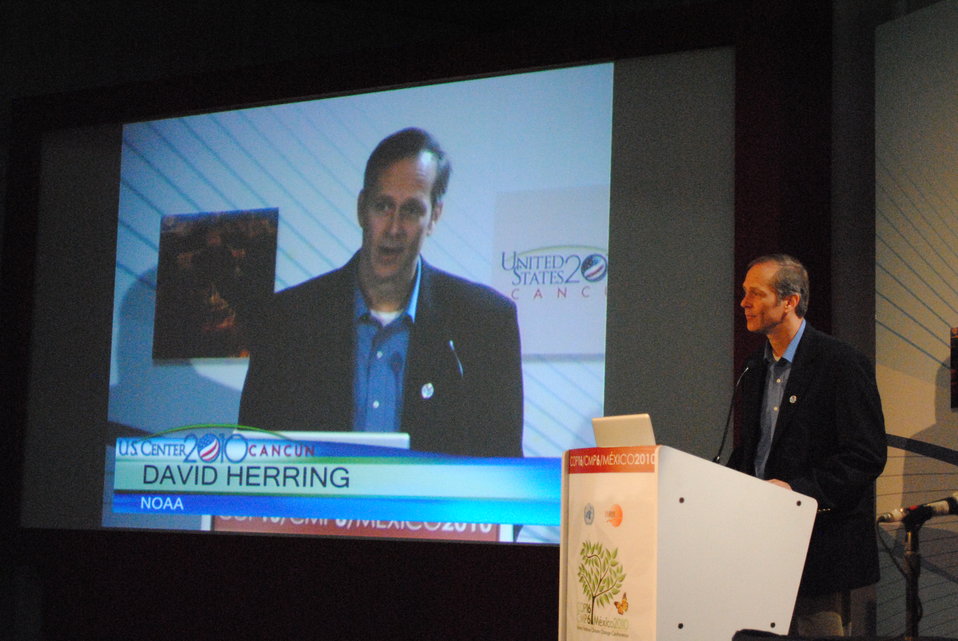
David Herring Moderates the 'Open EI Platform' Side Event

David Herring of NOAA moderates the 'OpenEI Platform' side event at the U.S. Center at COP-16 in Cancun, Mexico, on December 1, 2010.